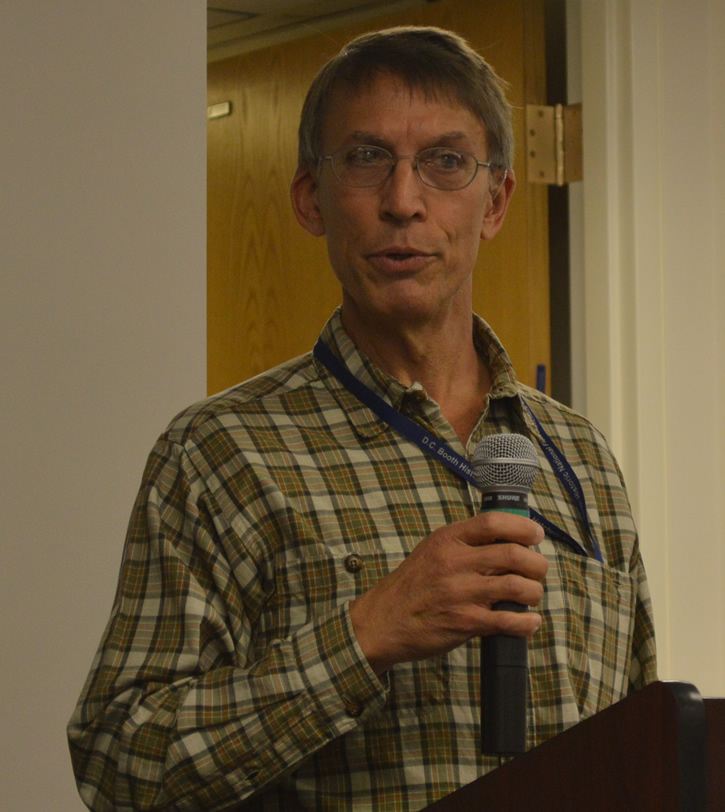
Regional Director Steve Guertin Moves on to Senior Leadership Position

On November 1, 2012, USFWS Mountain-Prairie Regional Director, Steve Guertin, served his last day as Regional Director before moving on to a senior leadership position at Headquarters.

Regional leadership and partners shared their memories of Steve's outstanding leadership and his unique ability to leverage his outstanding technical skills while maintaining a very personable persona - all amidst a variety of challenging issues.